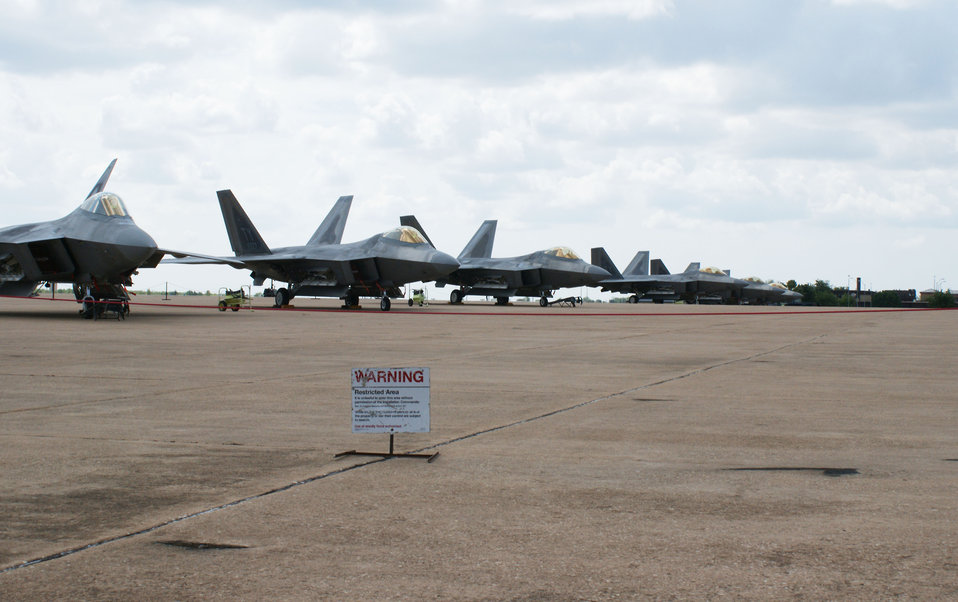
Hurricane Isaac Prep

F-22 Raptors from Tyndall Air Force Base, Fla., sit on the ramp Aug. 28, 2012, at Sheppard Air Force Base, Texas. The 82nd Training Wing and 80th Flying Training Wing assisted in bedding down 14 aircraft and 40 personnel after their evacuation due to Hurricane Issac.